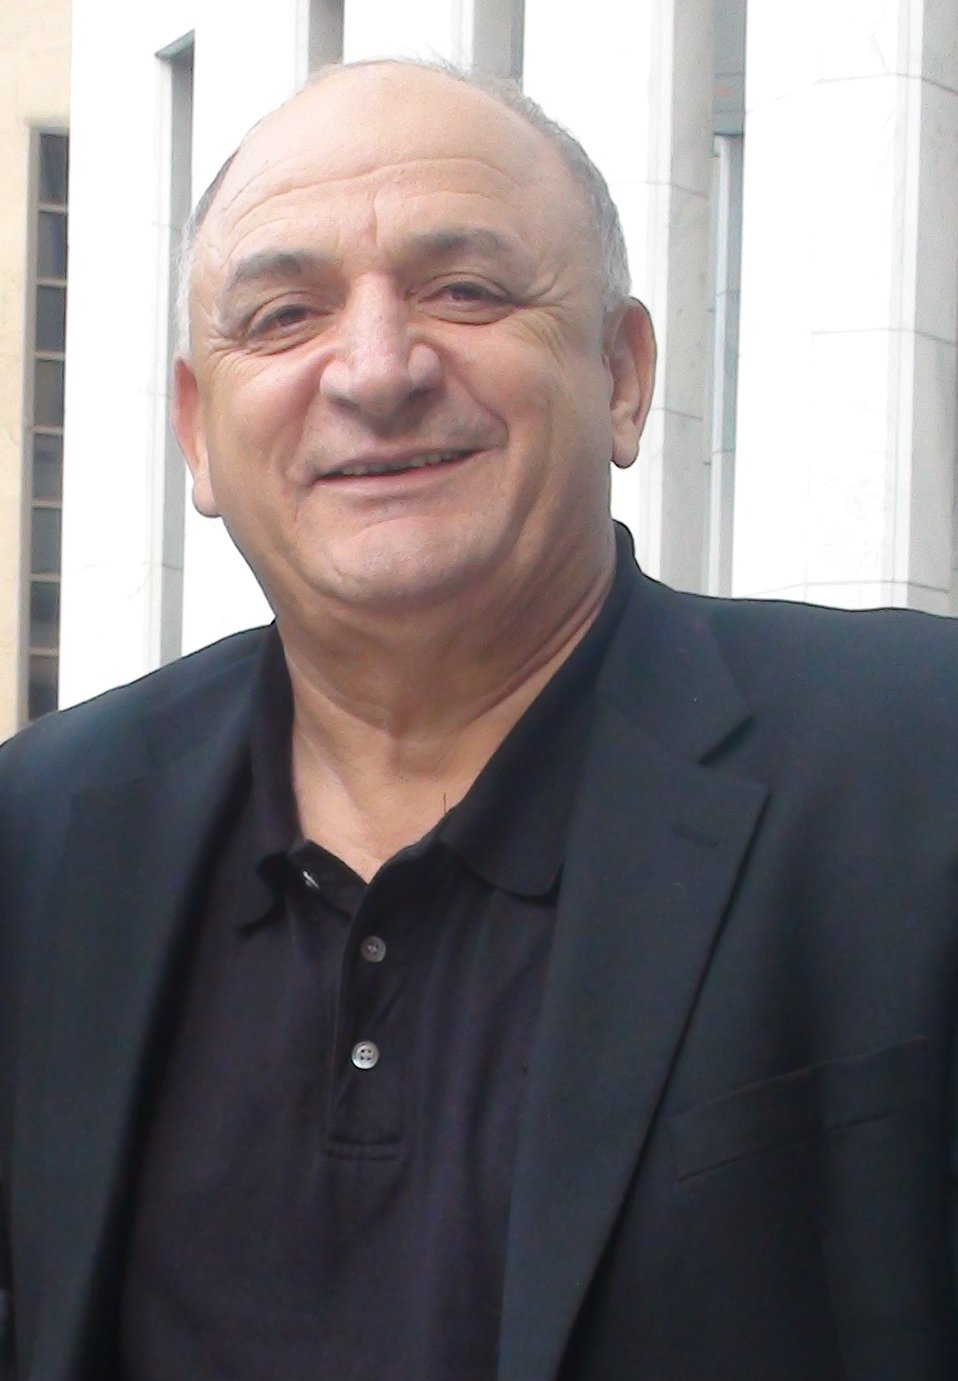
Yitzhak Tshuva, a businessman from Israel עברית: יצחק תשובה, איש עסקים ישראלי